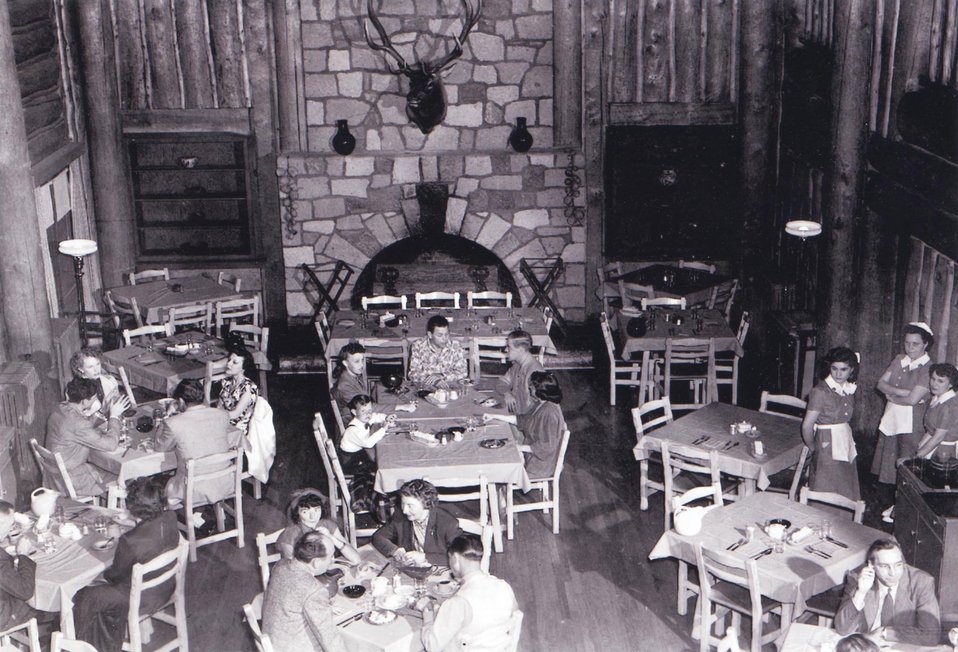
FULLER LODGE INTERIOR COLLECTION